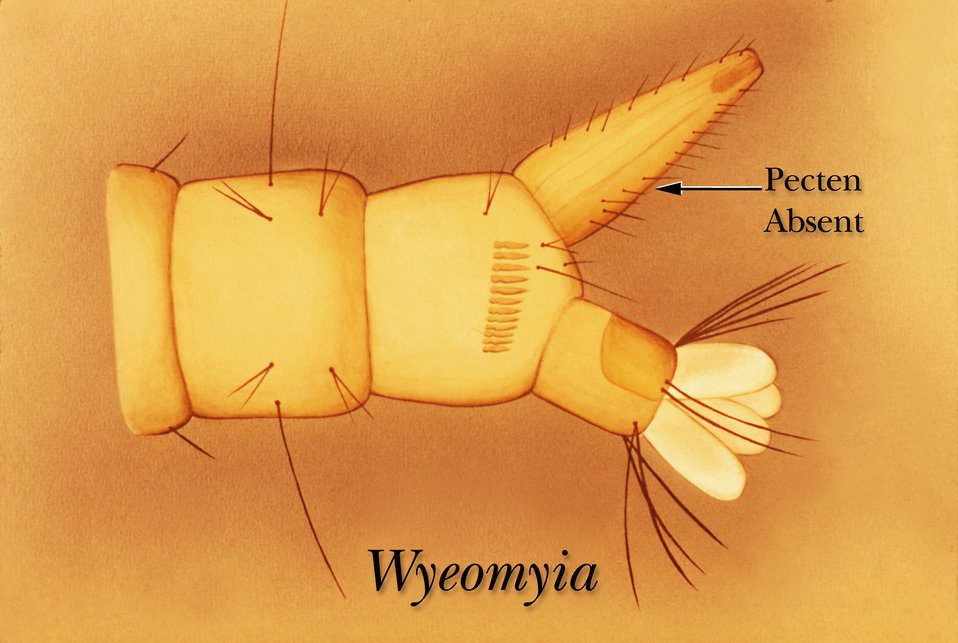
A drawing showing that the Wyeomyia mosquito larva has no pectin row on the ventral surface of its siphon tube.